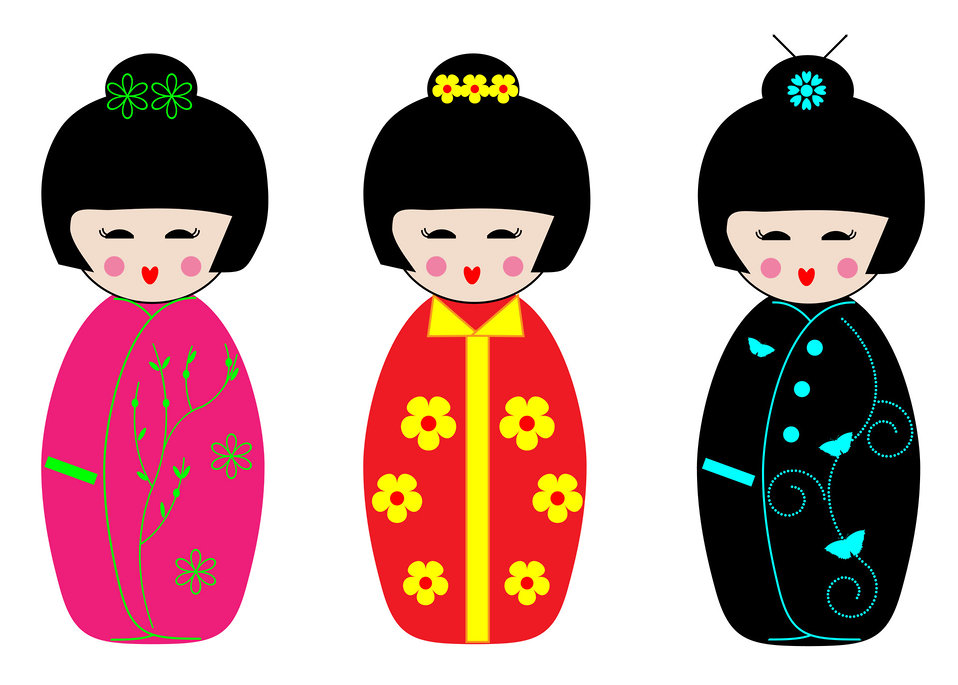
Kokeshi dolls clipart

Cute japanese kokeshi dolls clipart.